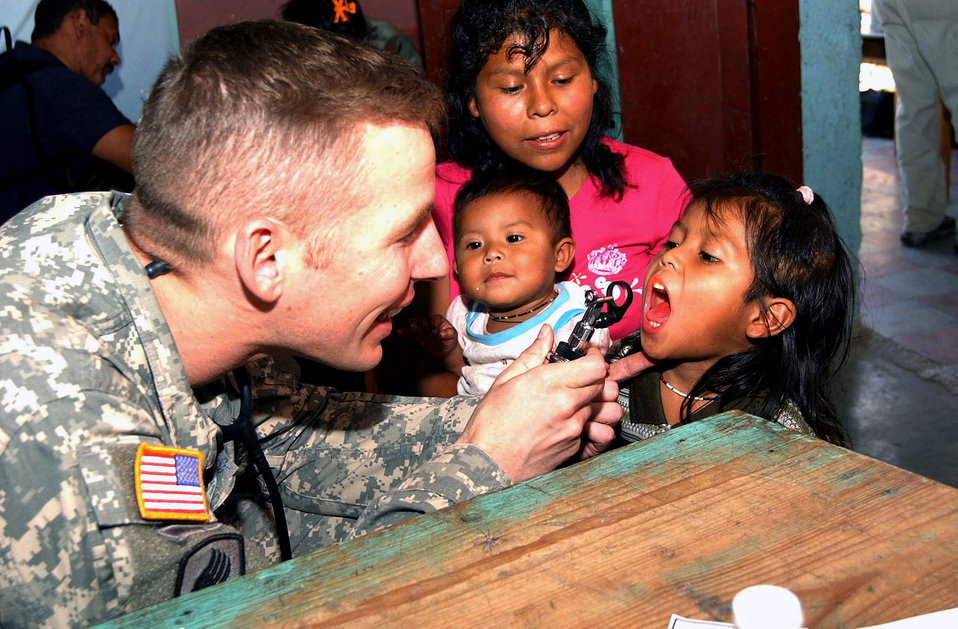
Medical element helps Honduran village

Army Maj. (Dr.) Richard Malish examines a child during a Medical Readiness Training Exercise June 29 in El Horno, Honduras. The medical team saw 1,072 patients during the two-day mission. Major Malish is a cardiologist and the flight surgeon at Soto Cano Air Base, Honduras.